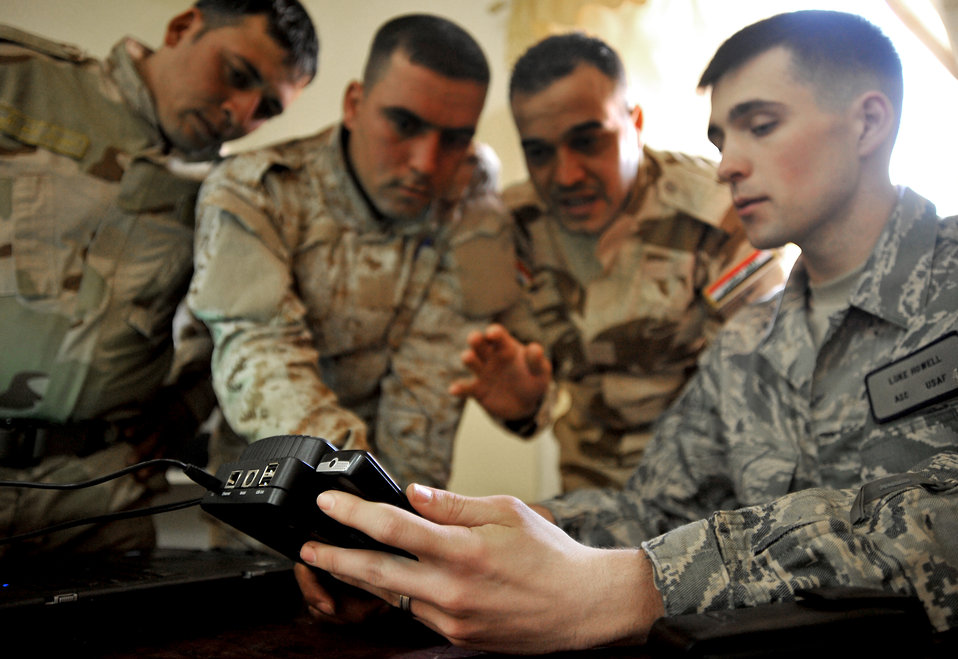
DOMEX

Airman 1st Class Luke Howell shows Iraqi soldiers how to use a CelleBrite machine to gather intelligence from a phone Jan. 5, 2011, on Joint Security Station Constitution, Iraq. Airman Howell is a documentation and media exploitation analyst at Camp Liberty, Iraq. The DOMEX mission is to gather actionable intelligence from documents, electronic devices and other materials collected on the battlefield.